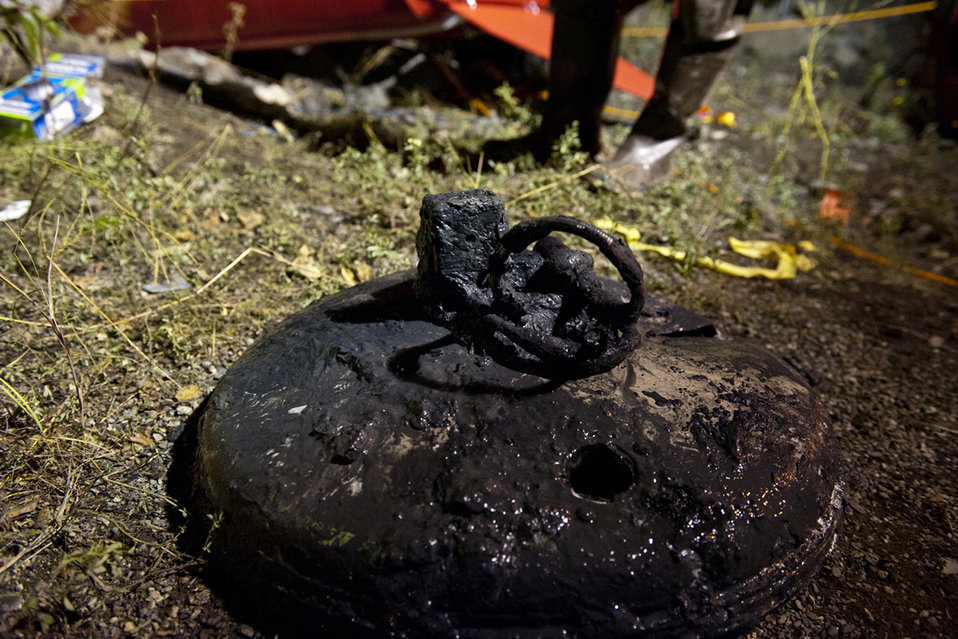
Phantom in the water

A piece of an F-4 Phantom II fuel tank lies on the ground of the Port of Anchorage, Alaska, Sept. 18, 2012. The Anchorage Port Authority and the Joint Base Elmendorf-Richardson Crash Recovery Unit, under the 3rd Maintenance Squadron, are removing an F-4 fuel tank that is embedded in the harbor bank.